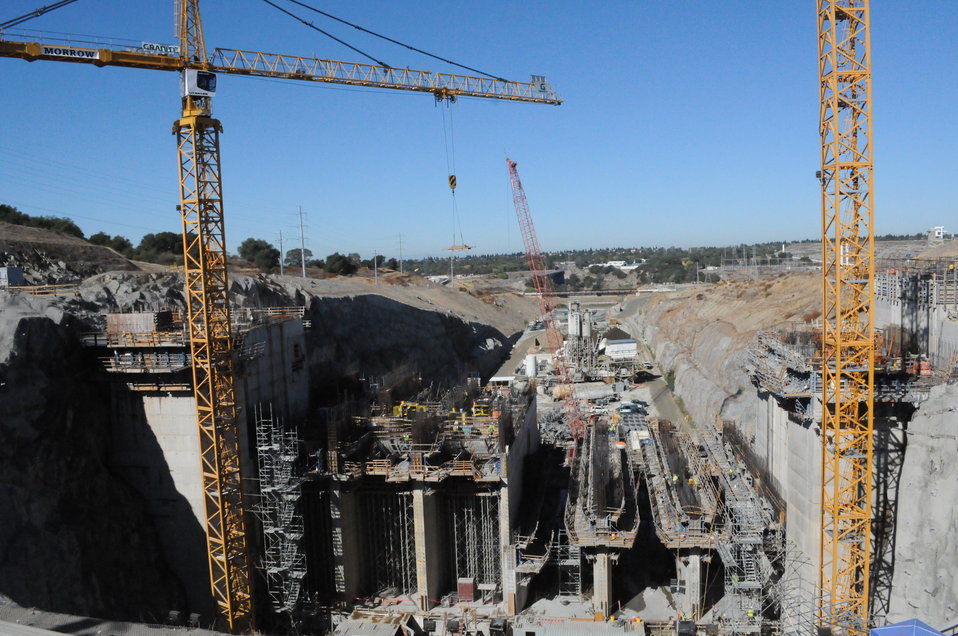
Folsom Dam auxiliary spillway

The control structure of the Folsom Dam auxiliary spillway in Folsom, Calif., as it appears Sept. 27, 2013.